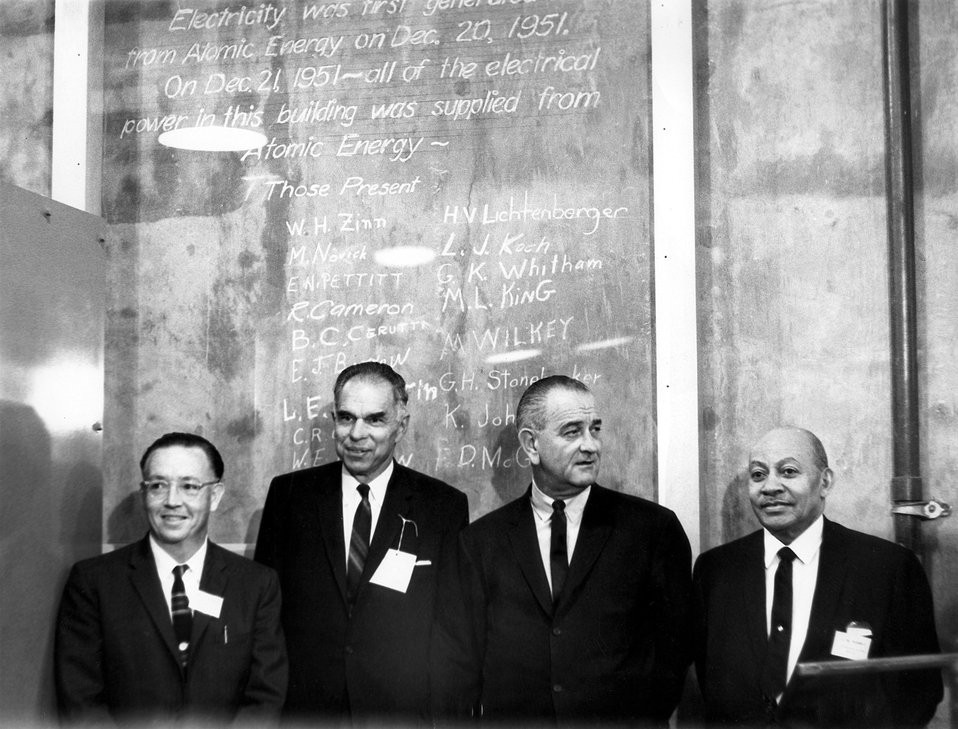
Ramey, Seaborg, President Lyndon B. Johnson and Nabrit, August 26, 1966.